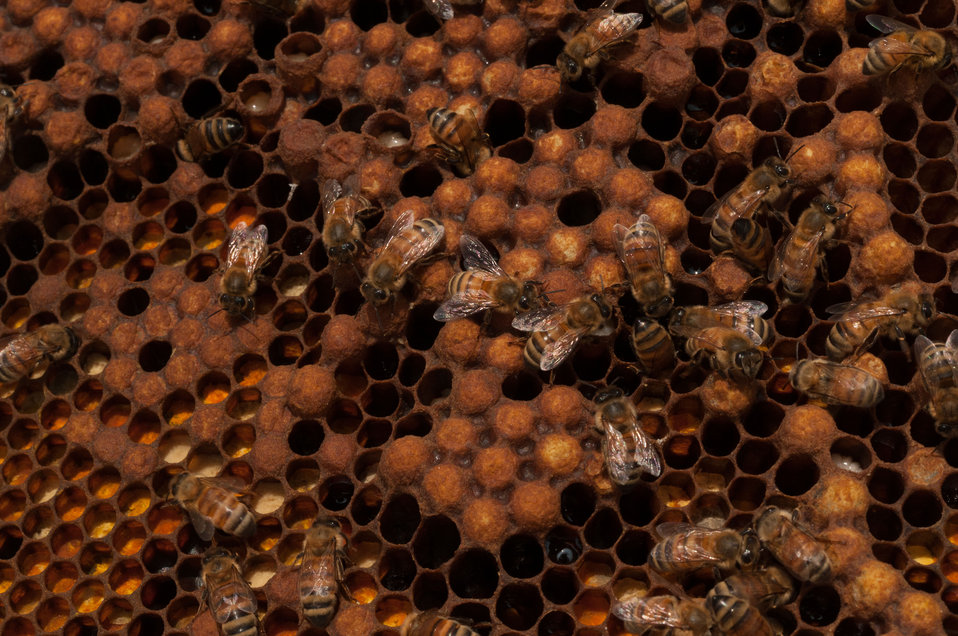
A hive of honey bees hard at work in the apiary atop the U.S.Department of Agriculture (USDA) Jamie Whitten building in Washington, D.C. on May, 22, 2013. Bees are one of nature’s many pollinators for flowers and crops and are crucial in production for fruits and vegetables. Some of the crops pollinated by bees are apples, squash, and almonds. Honeybees are responsible for pollinating approximately $15 billion worth of crops in the U. S. each year. The U. S. Department of Agriculture (USDA) Agricultural Research Service (ARS) and Natural Resource Conservation Service (NRCS) are working on ways to mitigate the decline of the bee population by coordinating pollination research, conservation, and education among USDA agencies and their partners.